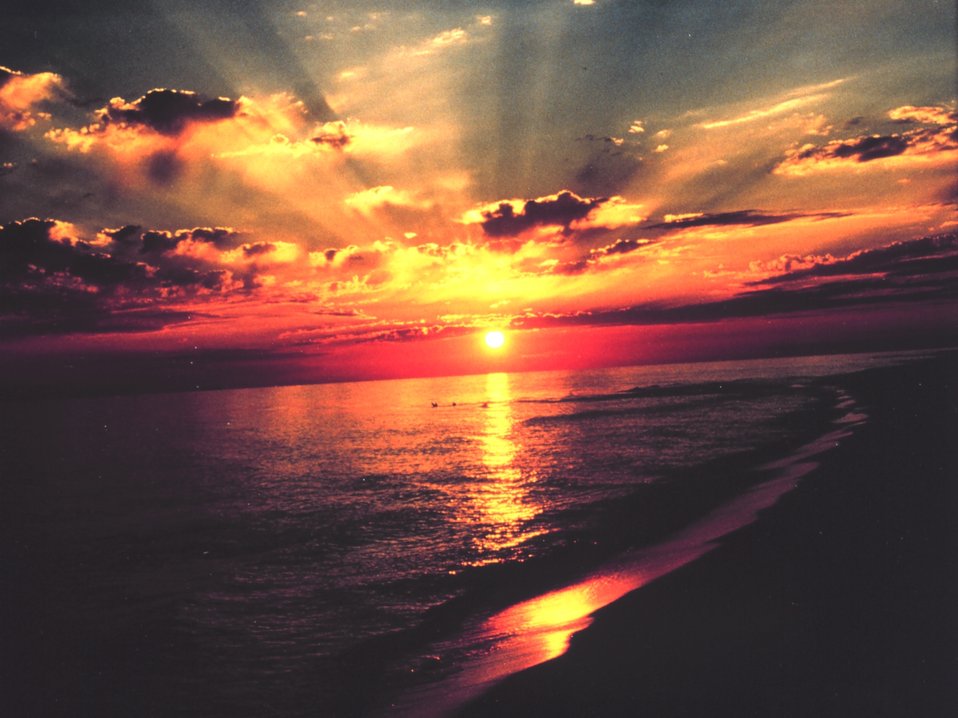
Sunset at Pensacola Beach